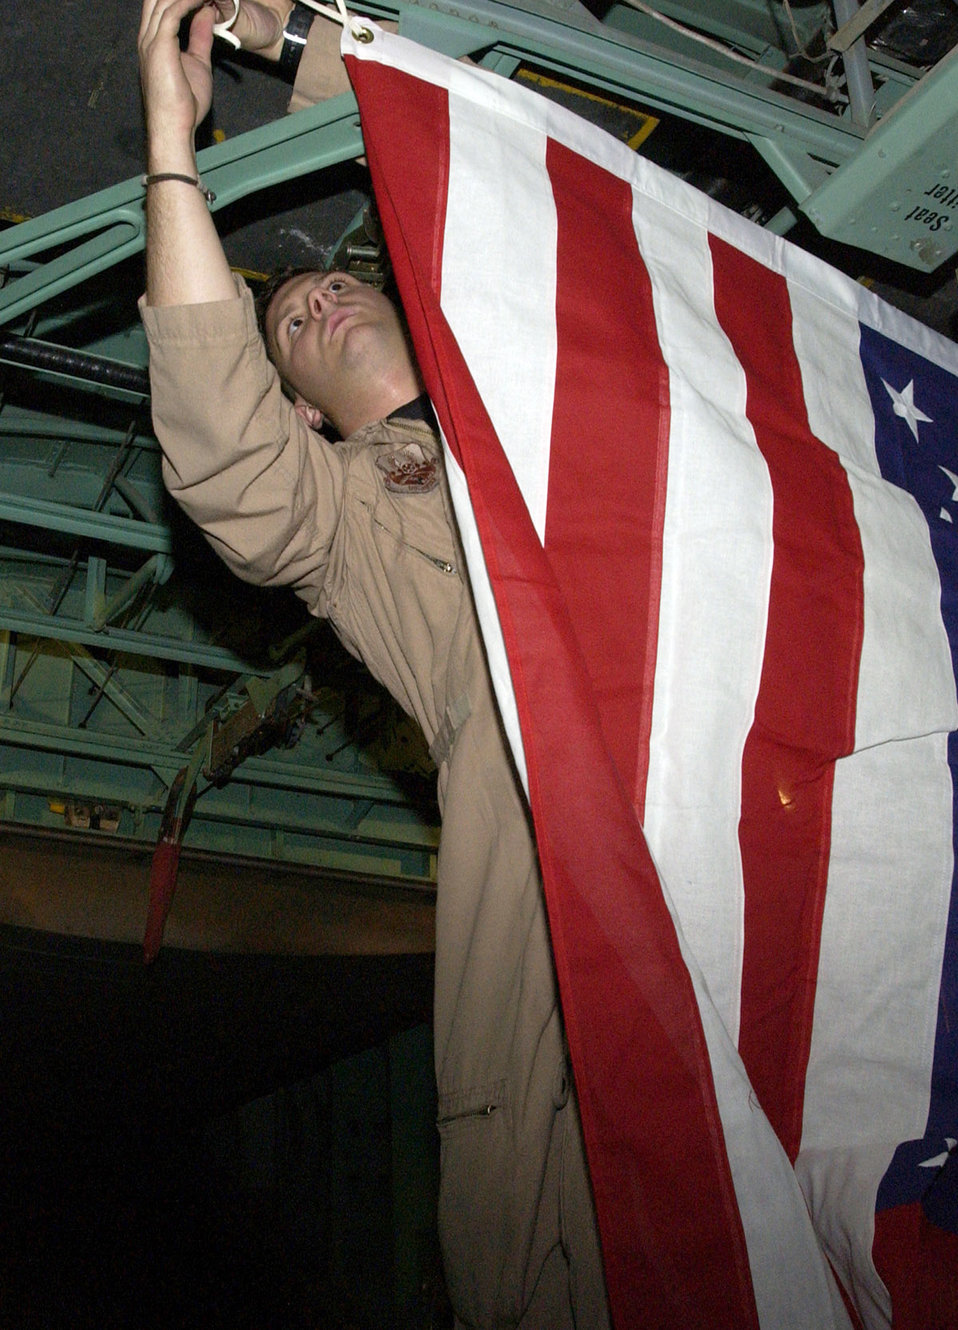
Bringing troops home safely

SOUTHWEST ASIA (AFPN) -- Senior Airman Greg Nardone hangs a flag in the cargo bay of a 1962 C-130E prior to take off. Airman Nardone is deployed here from Pope Air Force Base, N.C. He is a loadmaster with the 737th Expeditionary Airlift Squadron.